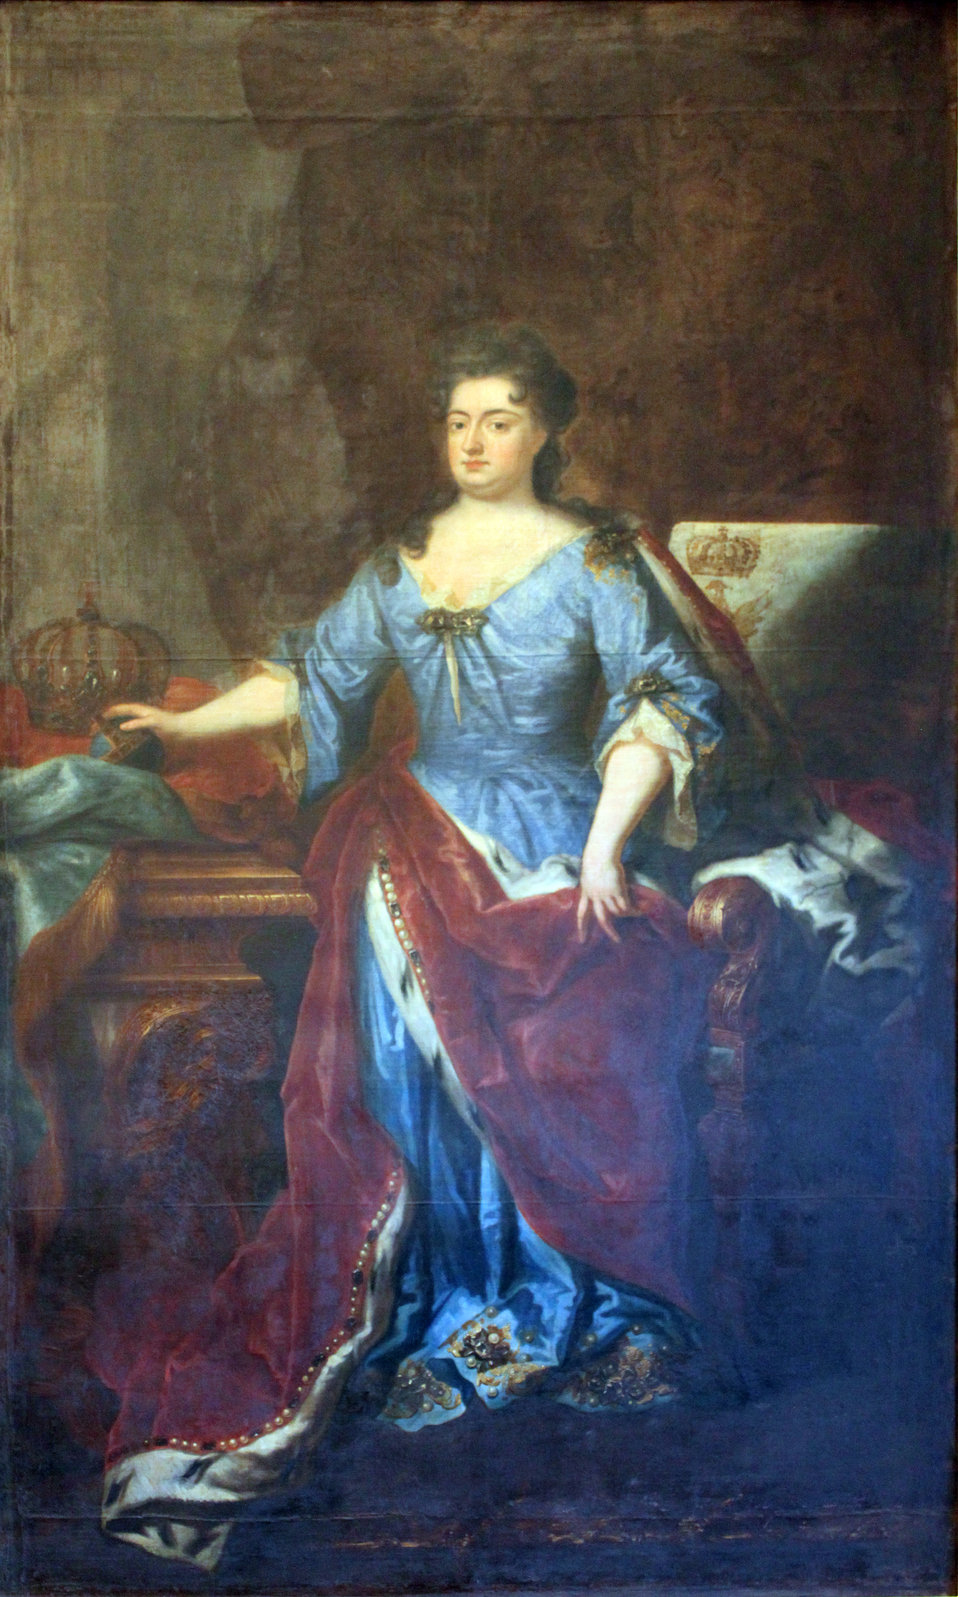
1702 Sophie Charlotte anagoria